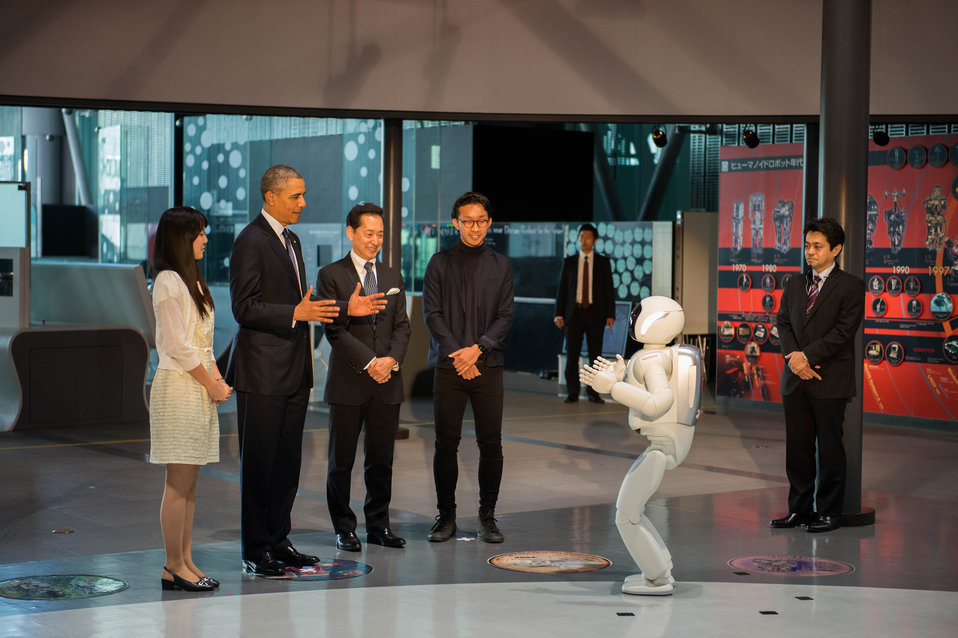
President Obama Watches ASIMO the Humanoid Robot

U.S. President Barack Obama, with Executive Director Mamoru Mohri of the Miraikan (the National Museum of Emerging Science and Innovation) and Japanese students, enjoys the performance of ASIMO the humanoid robot during his visit to the museum in Tokyo, Japan, on April 24, 2014.